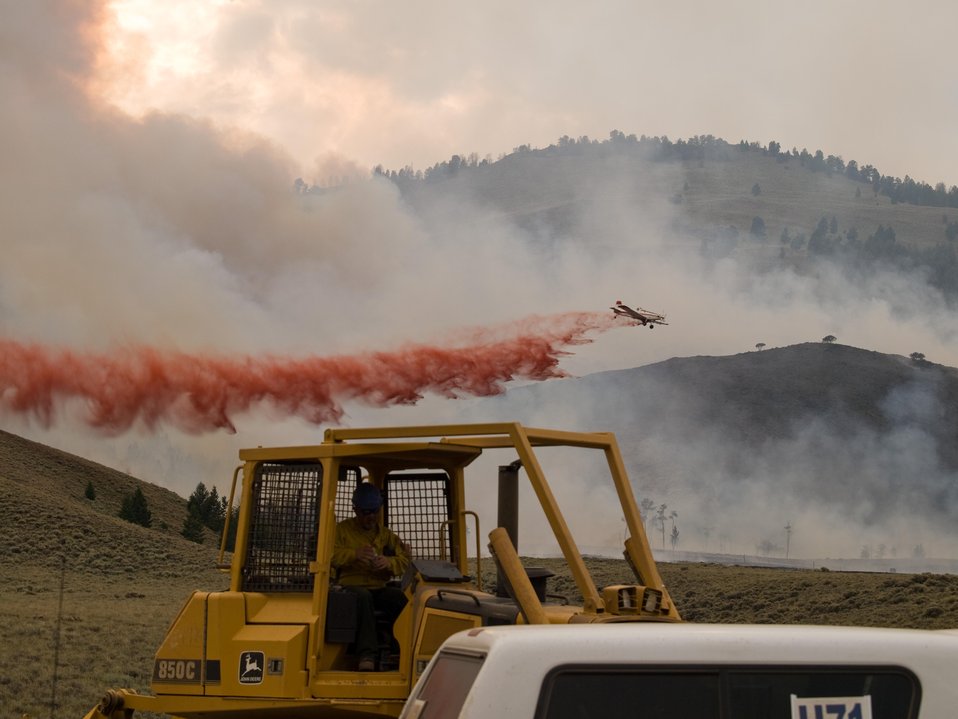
Aircraft makes flame retardant drop on the Lodgepole Fire. The Lodgepole Fire in the Salmon-Challis National Forest near Challis, ID began on Jul. 20, 2013 by lightning has consumed approximately 13,700 acres and is approximately 15% contained.